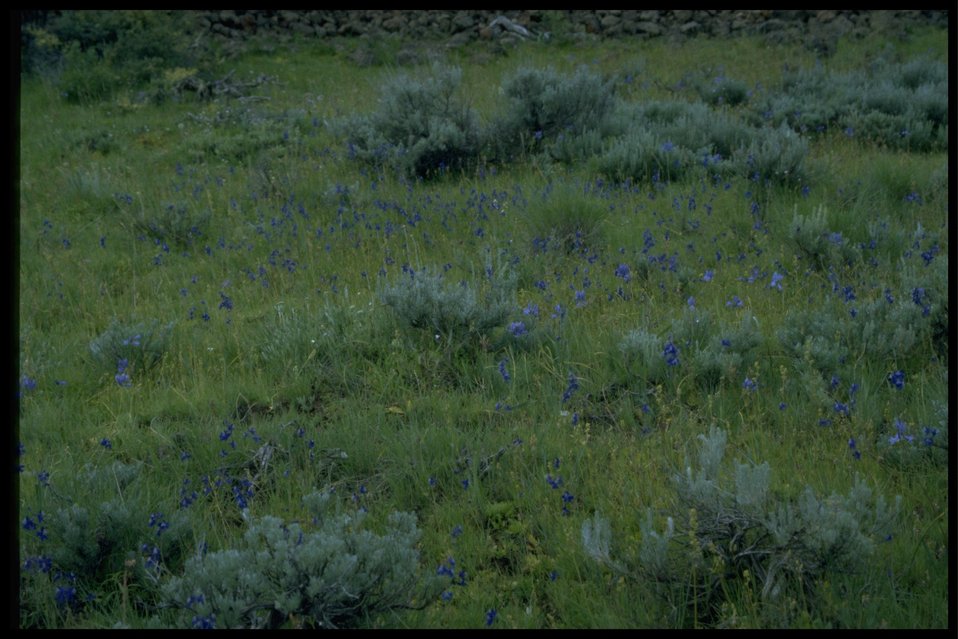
Farshot of Moist Swale with Larkspur and Brodiaea wildflowers.